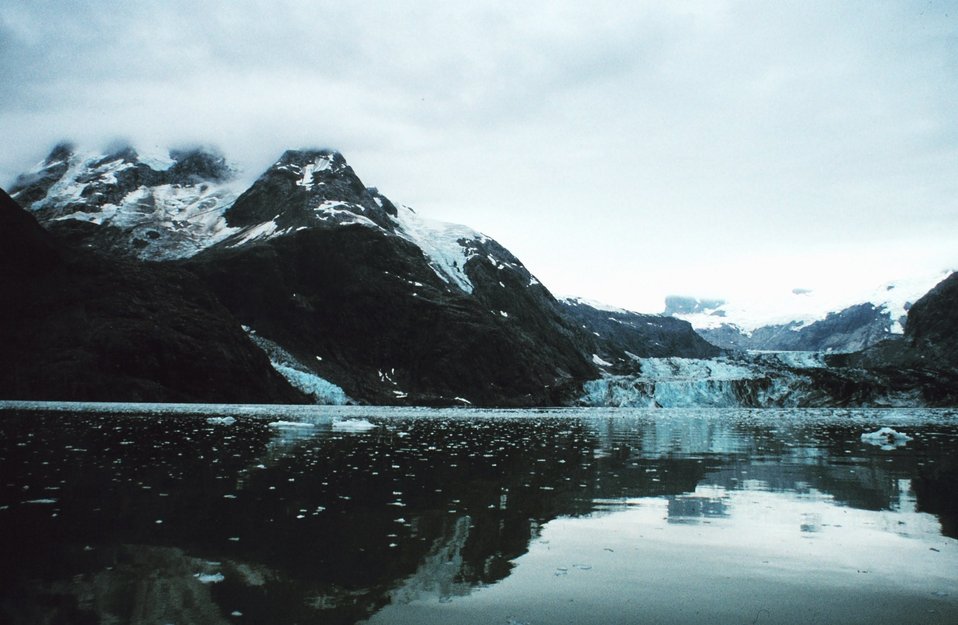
Johns Hopkins Glacier on right- Clark Glacier on left.